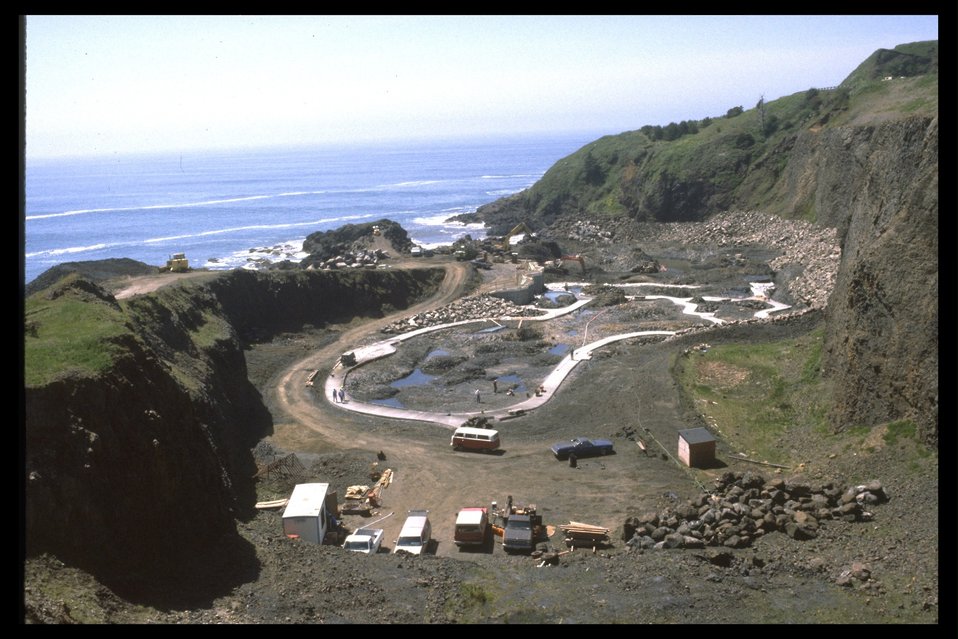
Construction of Quarry Cove tidepools.